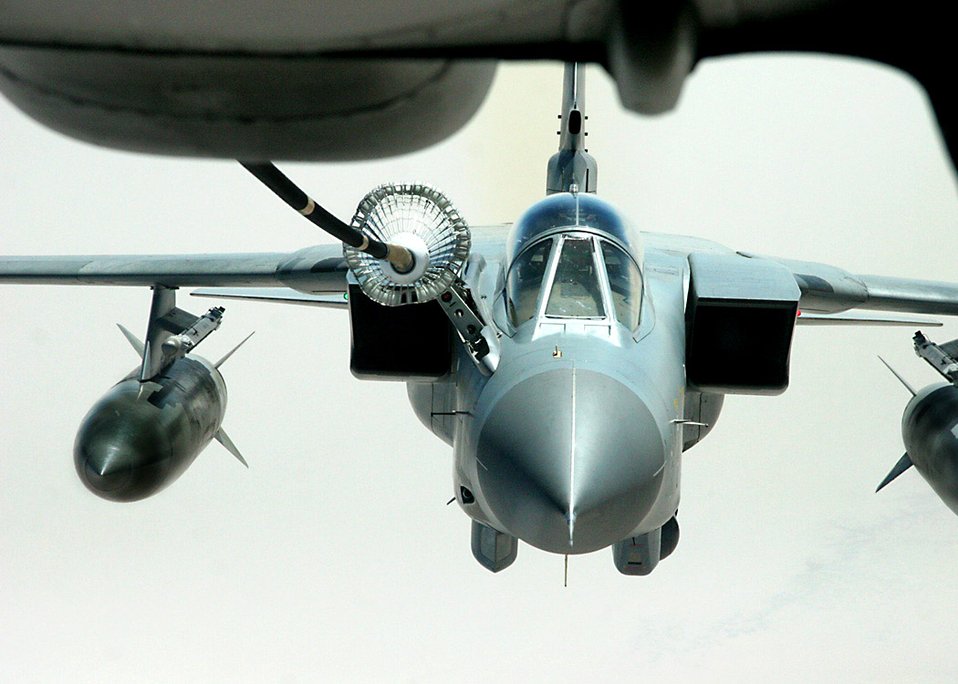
Oct. 18 airpower summary

A KC-10 Extender refuels a Royal Air Force Tornado GR-4 so that it can sustain airborne operations in support of Operation Iraqi Freedom. The KC-10 is with the 908th Expeditionary Air Refueling Wing.